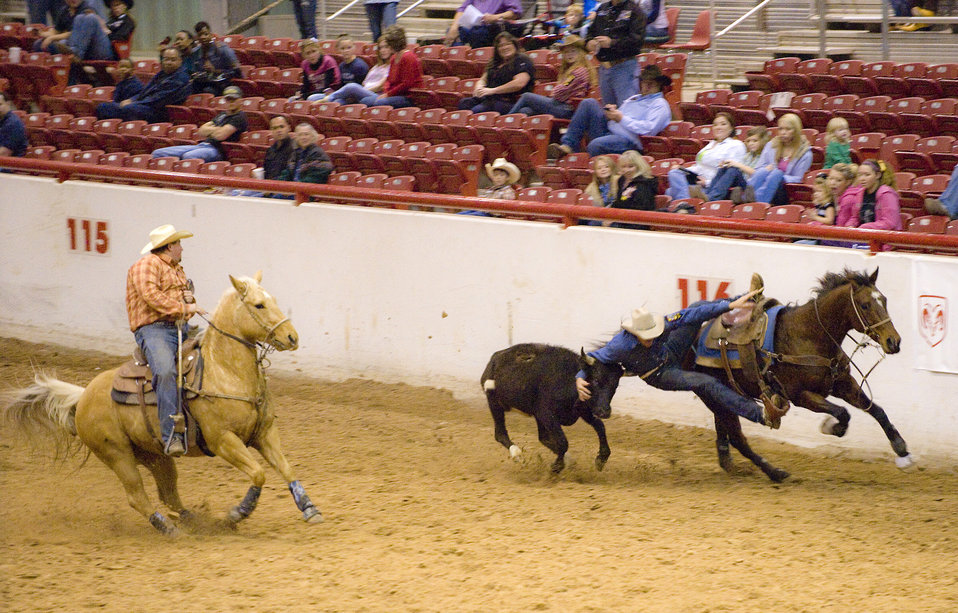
Airmen rope competition at rodeo world finals

Master Sgt. Travis Beck reaches for his steer during the steer wrestling competition at the Professional Armed Forces Rodeo Associations World Finals Nov. 20, 2010, in Glen Rose, Texas. Sergeant Beck is assigned to Travis Air Force Base, Calif. and earned first place in the Men's All-Around taking top honors of the rodeo.